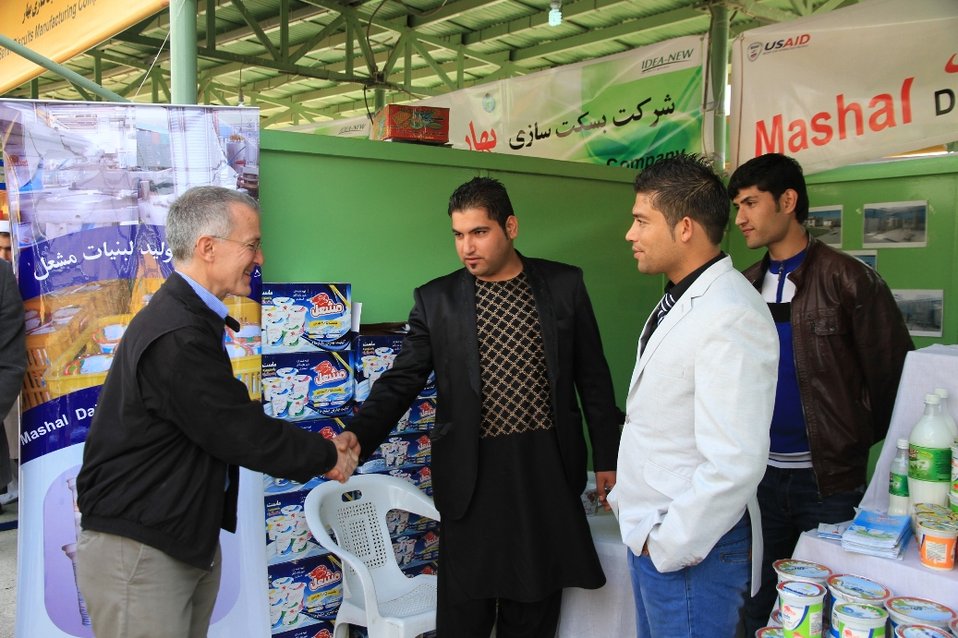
Ag.Fair, October 2013

William Hammink, USAID Afghanistan Mission Director, shakes hand with Ahmad Reza Hussainpur, Production Manager of Mashal Dairy Production Company at the Kabul International Ag.Fair, October, 2013